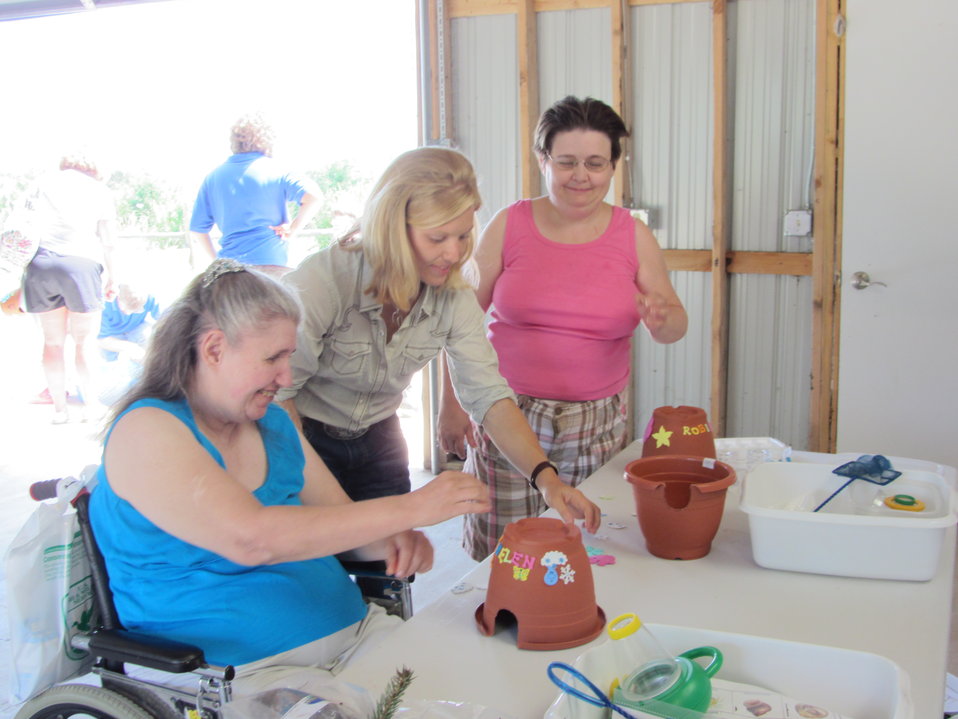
2011 Huron Prairie Fest

The toadhouses were a hit!